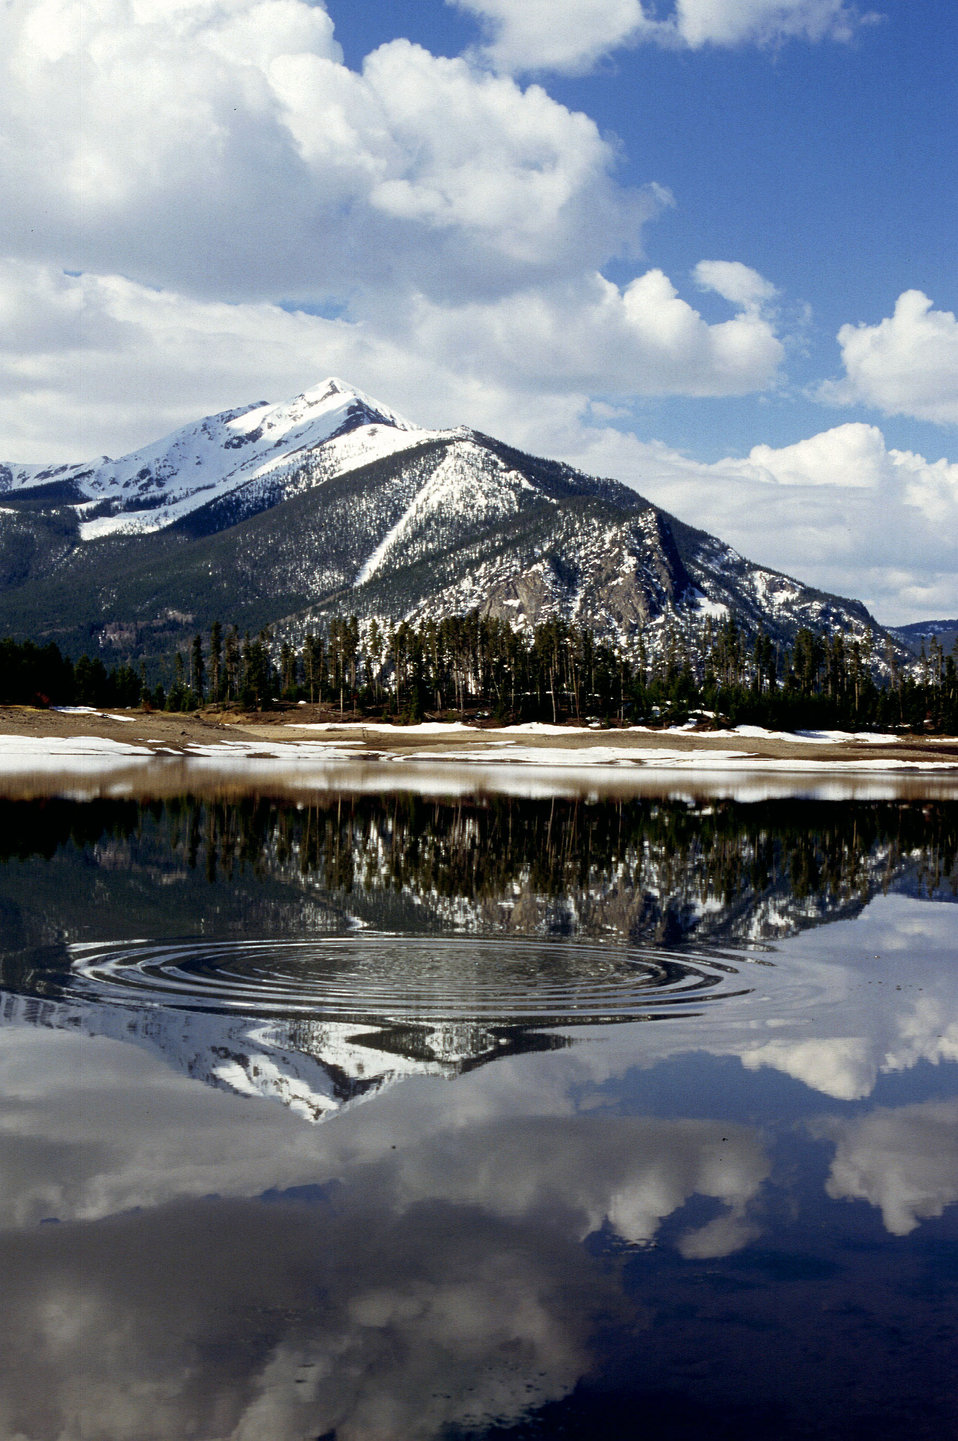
Snowmelt runoff fills a reservoir in the Rocky Mountains near Dillon, CO.